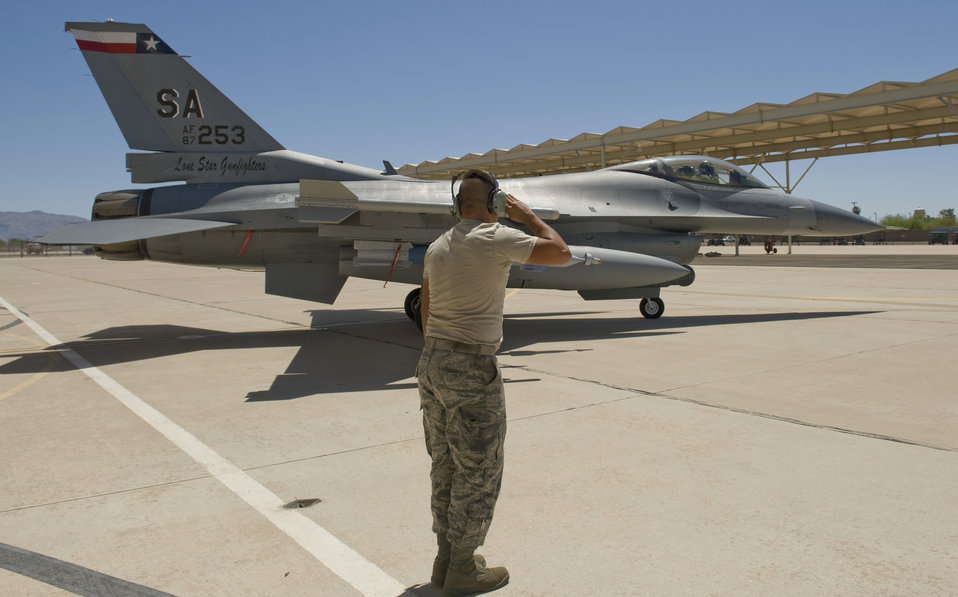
Airmen train next generation

Senior Airman Jacob Rocha salutes as his jet departs for a training exercise during Exercise Coronet Cactus April 23 at Davis-Monthan Air Force Base, Ariz. Airman Rocha is assigned to the Texas Air National Guard’s 149th Fighter Wing from San Antonio, and is an F-16 Fighting Falcon crew chief.